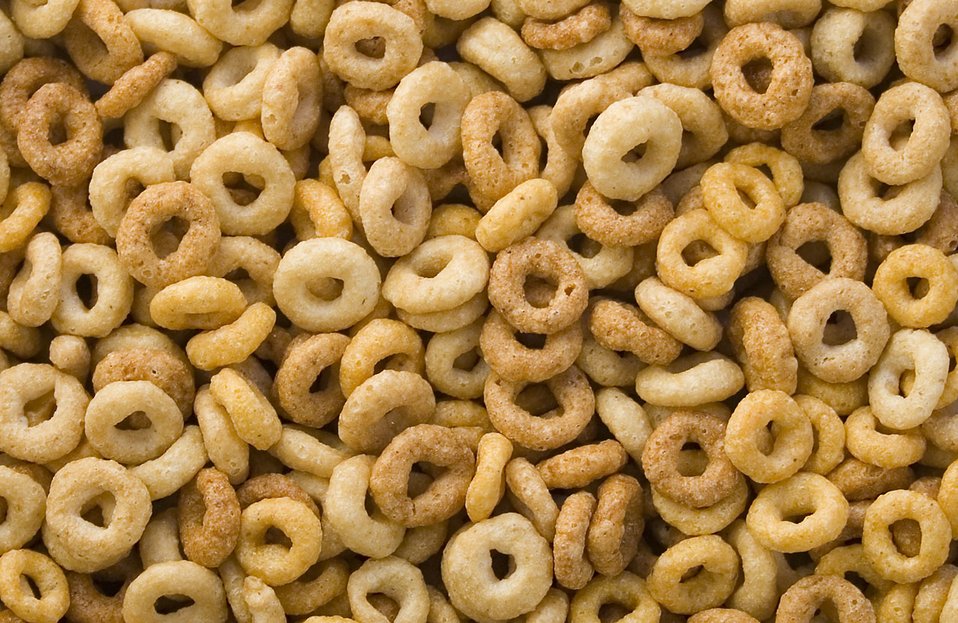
Mixture of cereals

Corn, oats, rice, wheat cereal rings - ideal as a background.